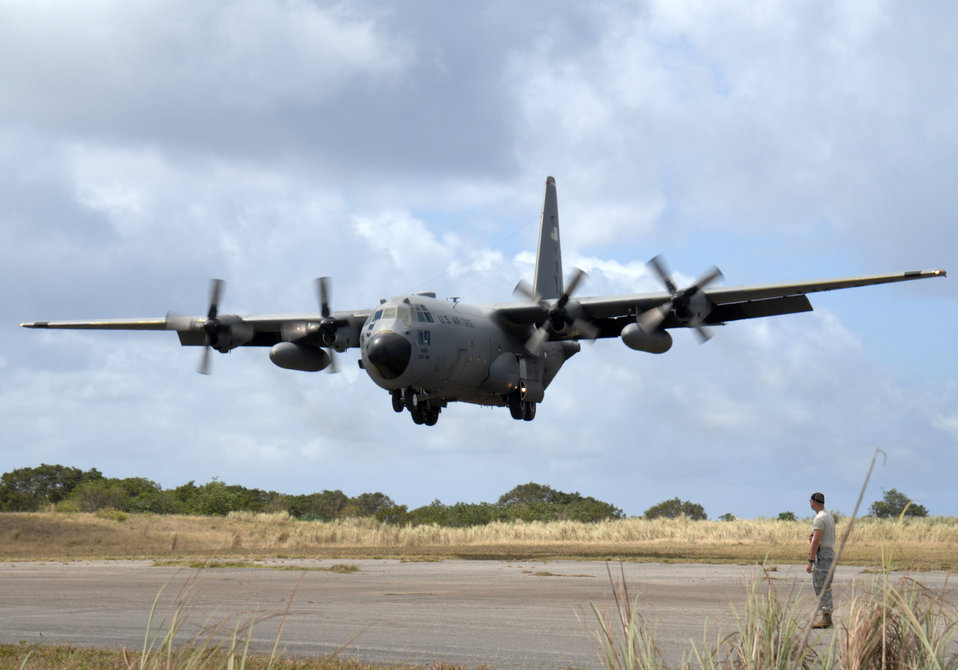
Andersen and Yokota Airmen train for disaster relief operations

Staff Sgt. Sean Cripe watches a C-130 Hercules land Feb. 17, 2010, at Northwest Field, near Andersen Air Force Base, Guam. Airmen from the 36th Contingency Response Group at Andersen AFB and the 374th Operations Group from Yokota Air Base, Japan, participated in a mock deployment to Northwest Field to rehearse time-critical actions for disaster relief operations. Sergeant Cripe is an air traffic controller with the 36th Mobility Response Squadron.